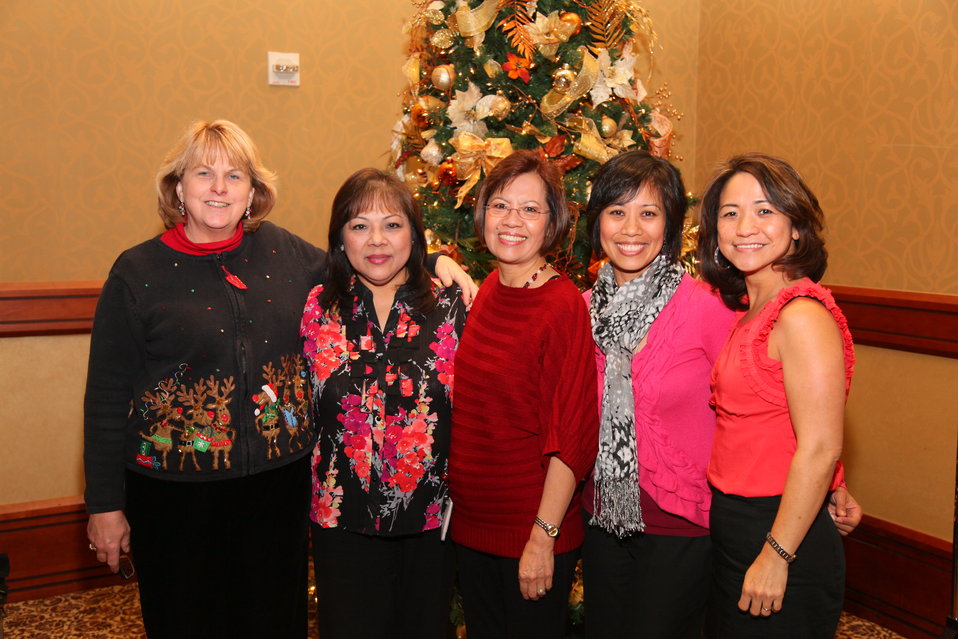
Sacramento District Holiday Party 2011